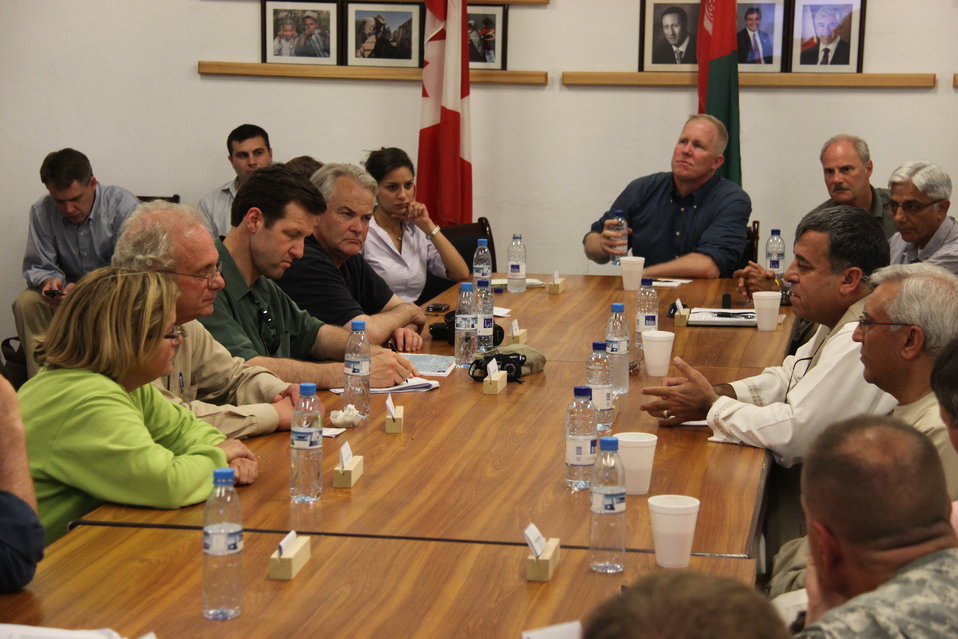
Meeting with Local Leaders in Kandahar